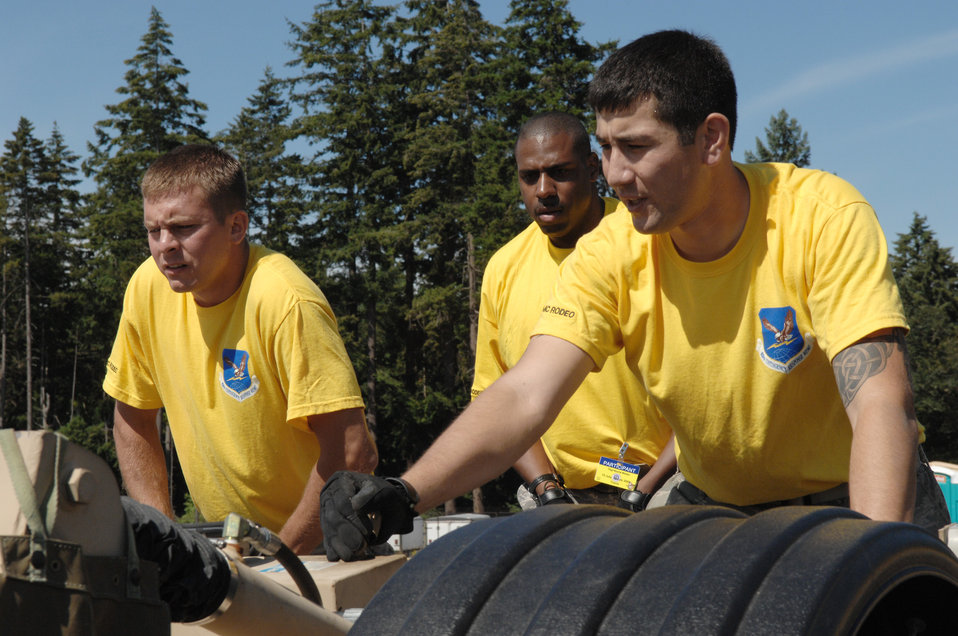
Air Force's newest mobile air shelter part of Rodeo

Airmen from 615th Contingency Response Wing of Travis Air Force Base, Calif., assemble the hardsided expandable light air mobile shelter July 20 during an Air Mobility Rodeo 2009 competition at McChord Air Force Base, Wash. Use of the shelter is a first for Rodeo competition.